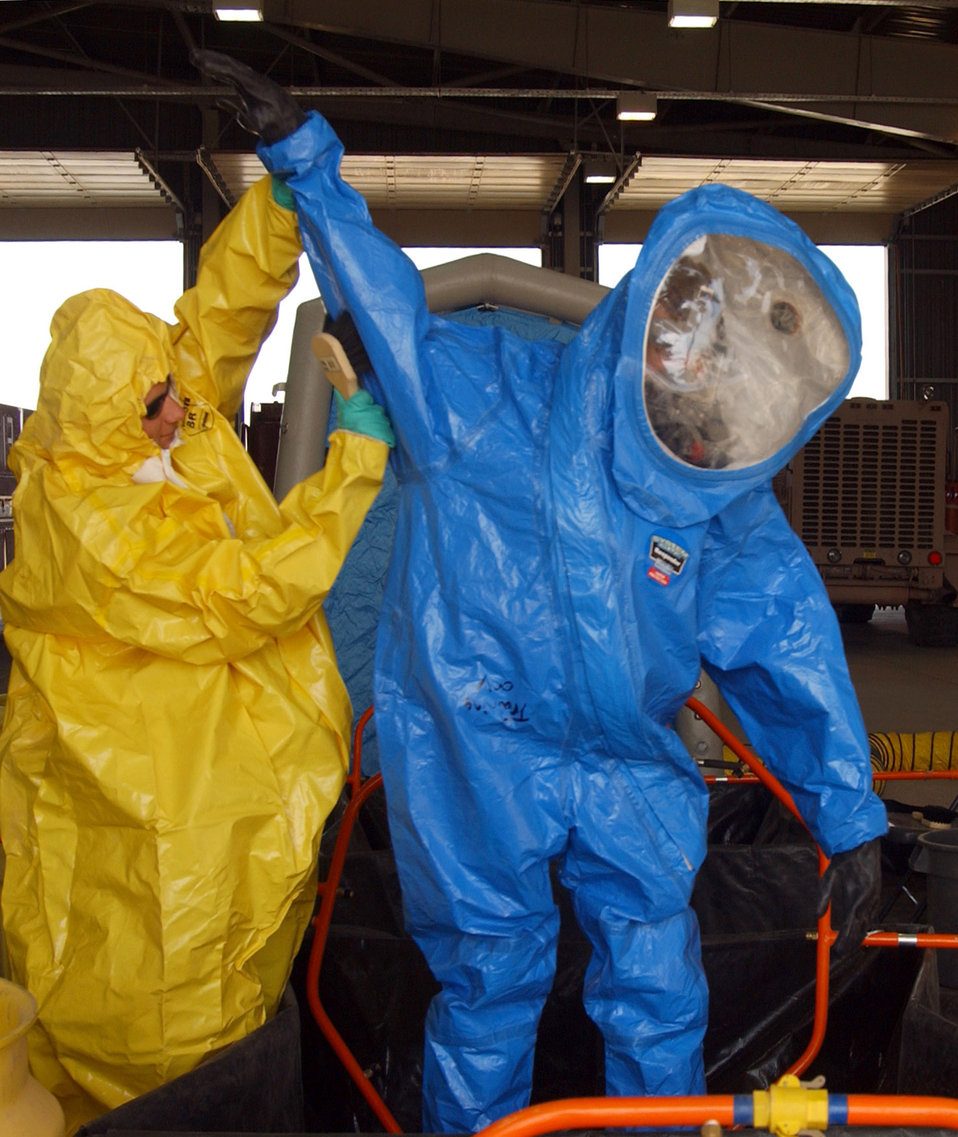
Hazmat training in Iraq

While wearing a yellow Level B suit, Army Spc. Michael Harms simulates scrubbing chemicals off of Airman 1st Class Glenn Rodgers, in a blue Level A suit, during a training exercise June 5 at Balad Air Base, Iraq. The firefighters set up a hazardous-material decontamination line and practiced so that they would be able to quickly respond to any real-world threat within 10 minutes. The servicemembers are firefighters with the 332nd Expeditionary Civil Engineer Squadron Fire and Emergency Services Flight.